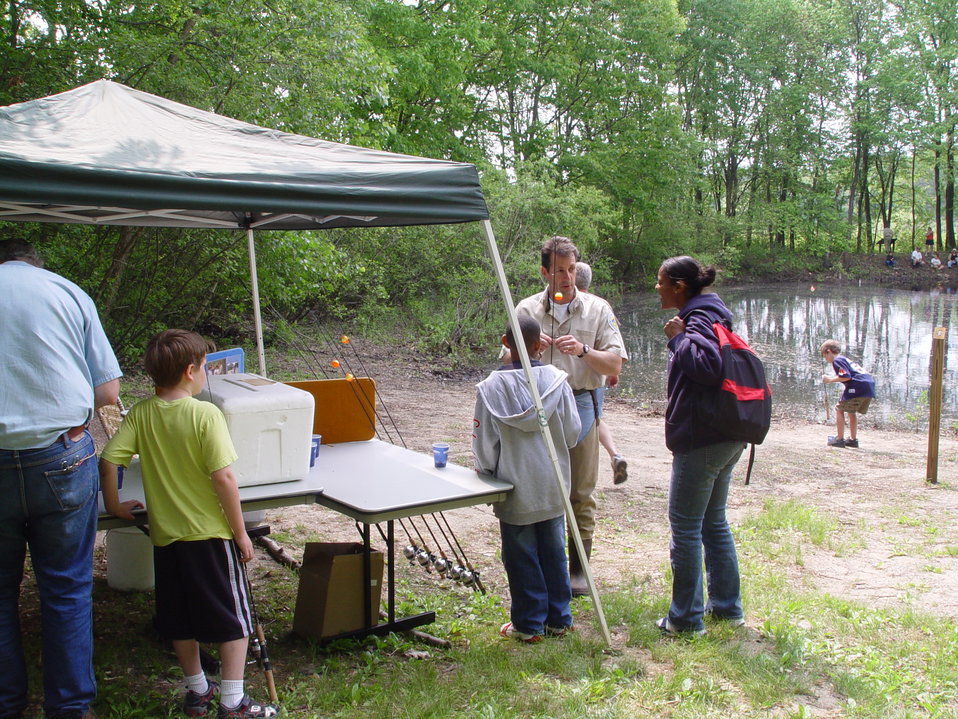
Great Meadows Fishing Day 2010

Great Meadows National Wildlife Refuge in Massachusetts holds an annual fishing day where all anglers -- beginners and experienced -- join refuge staff and other experts for a day filled with fishy fun!

Visitors learn how to fly-cast, spin-cast, and even tie your own fly. All equipment and instruction is provided, and there are always games, crafts, music and face painting as well.